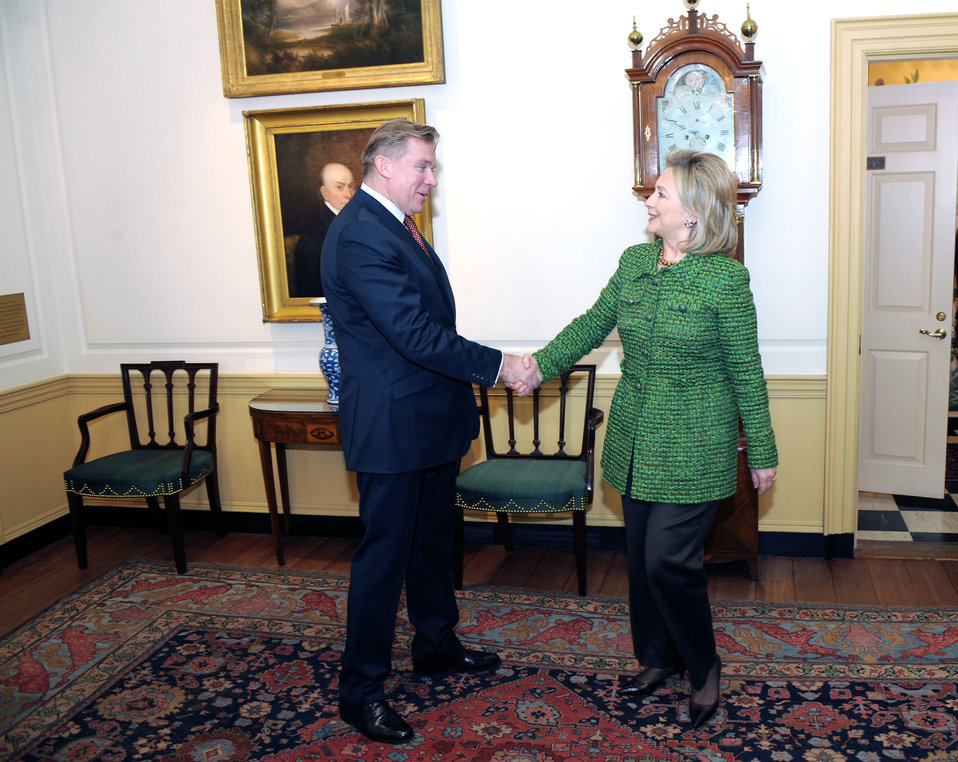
Secretary Clinton Shakes Hands With Lithuanian Foreign Minister Azubalis

U.S. Secretary of State Hillary Rodham Clinton shakes hands with Lithuanian Foreign Minister and Chairman of the OSCE Audronius Azubalis after their bilateral meeting at the U.S. Department of State in Washington, D.C., on February 16, 2011.